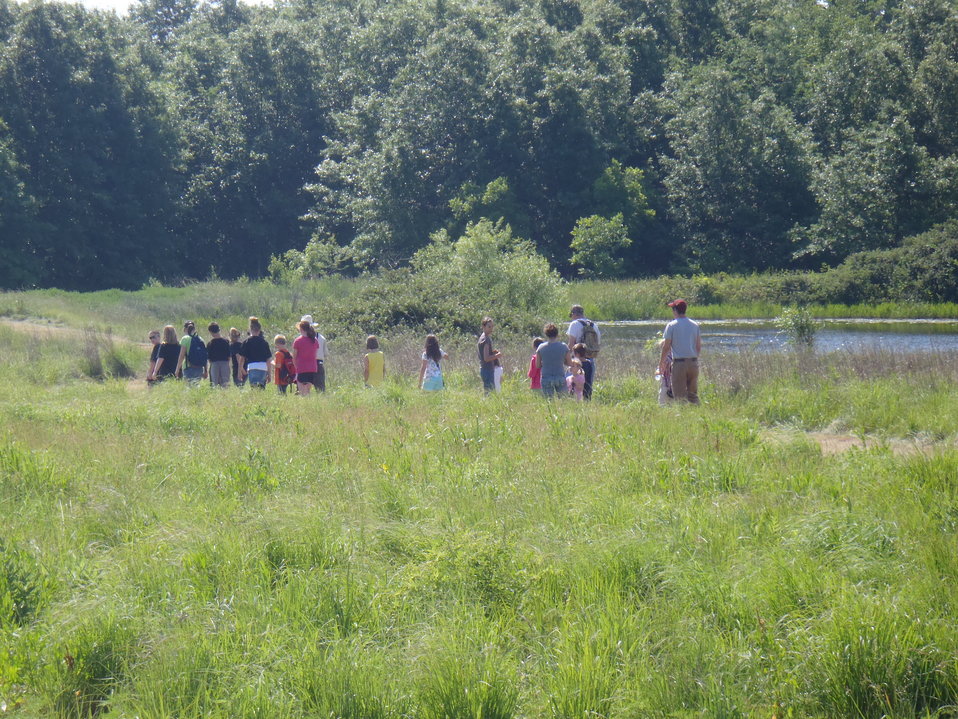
International Migratory Bird Day 2012

Marais des Cygnes National Wildlife Refuge